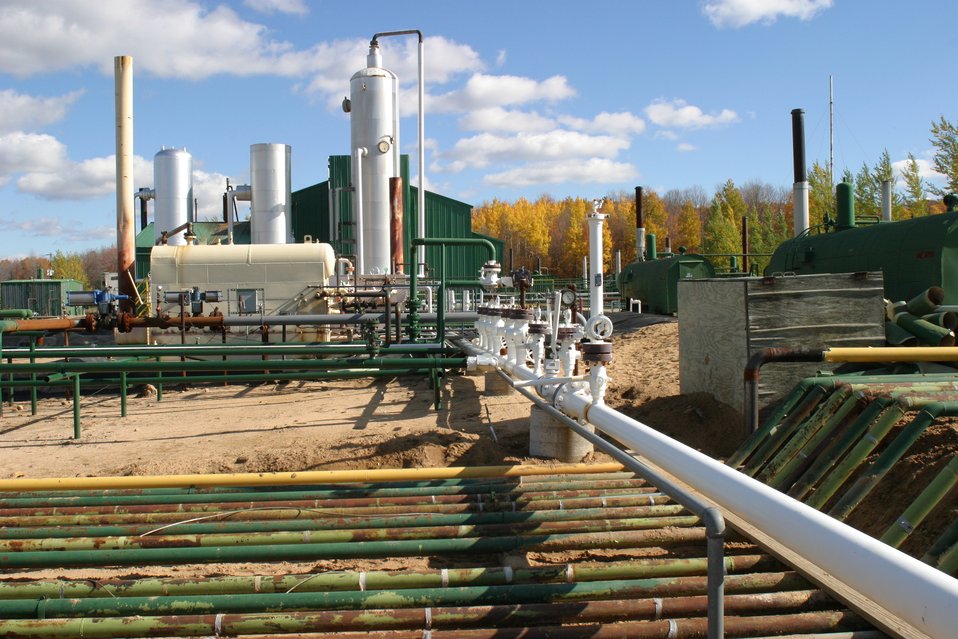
Enhanced oil recovery facility located in Gaylord, Michigan.